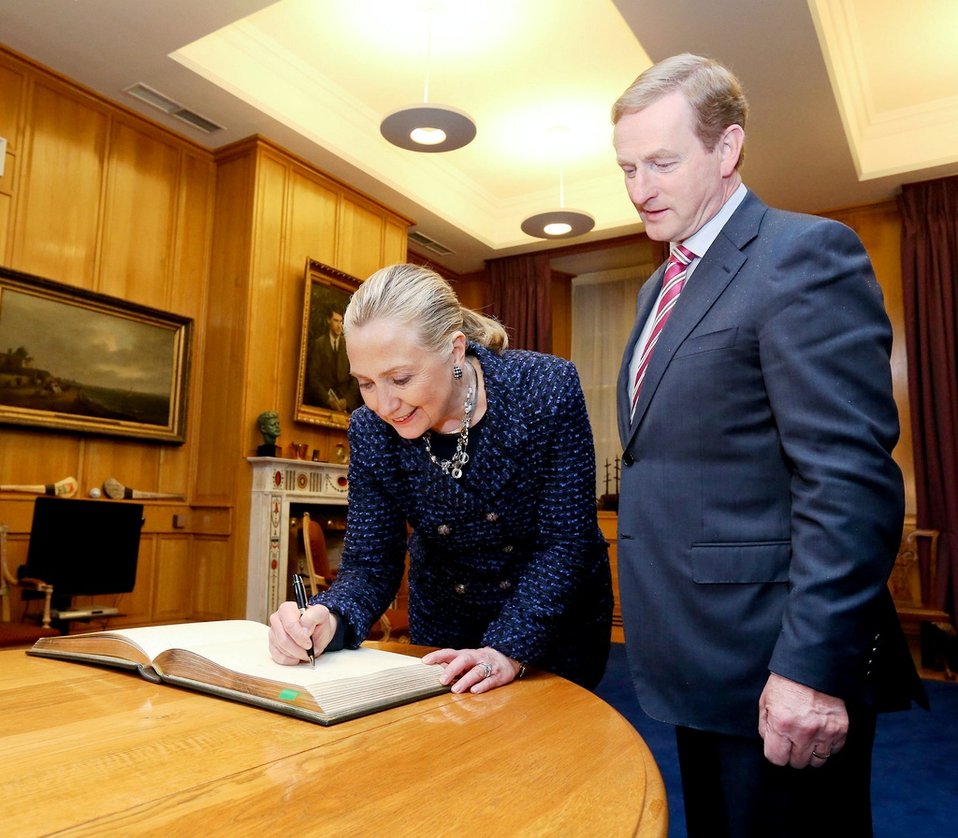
Secretary Clinton Signs the Guestbook at Taoiseach Kenny's Office

U.S. Secretary of State Hillary Rodham Clinton signs the guestbook at the office of Taoiseach Enda Kenny in Dublin, Ireland, December 6, 2012.